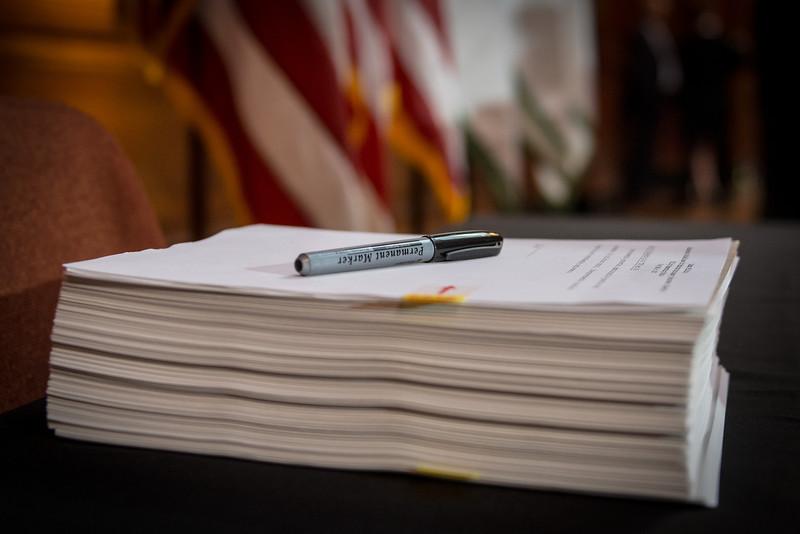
Day in the Life - June 2, 2014

10:11 am - The pen can indeed prove to be mighty. (5/15)